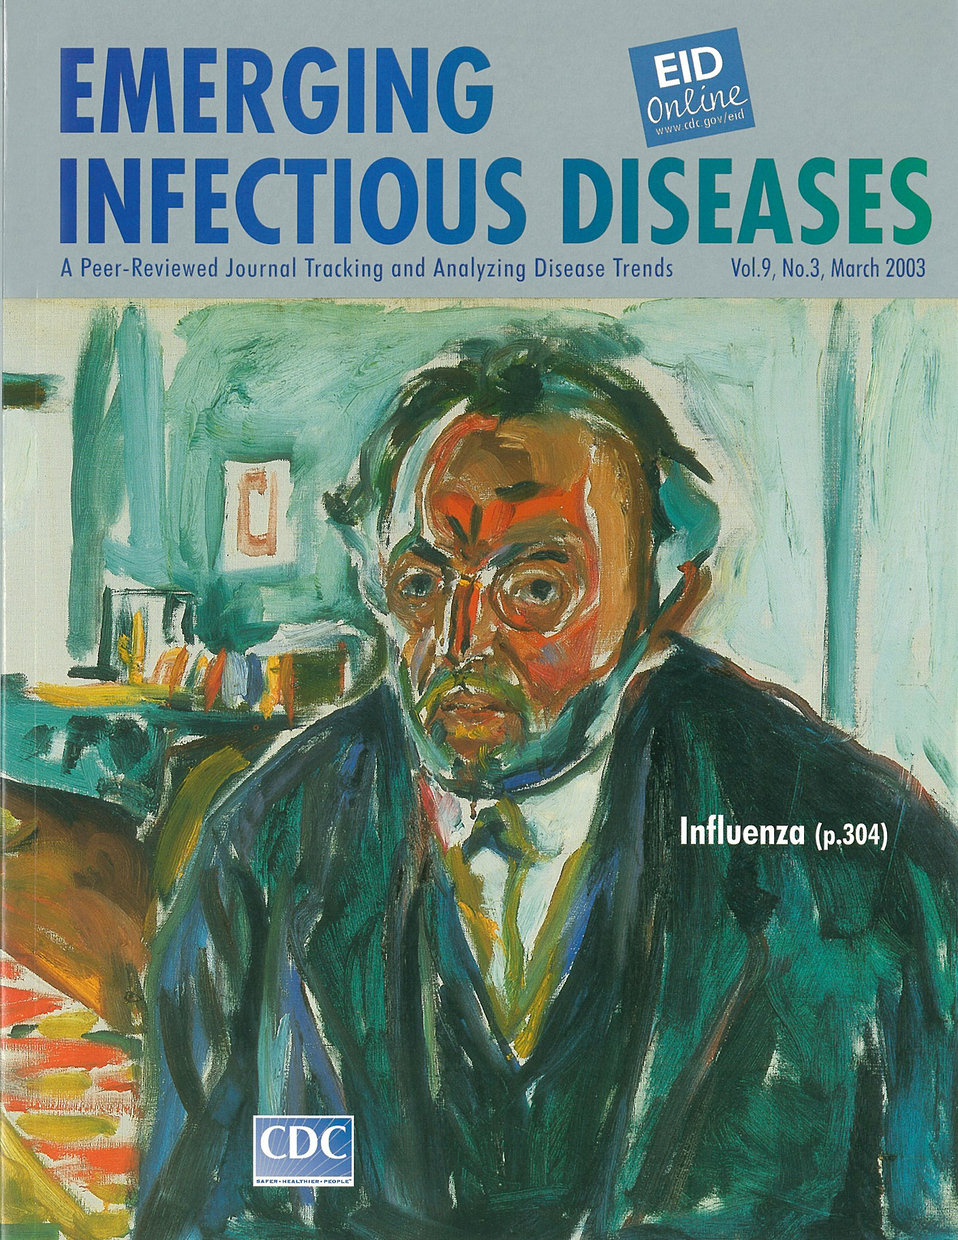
Emerging Infectious Diseases (EID) cover artwork for Volume 9, Number 3, March 2003 issue.